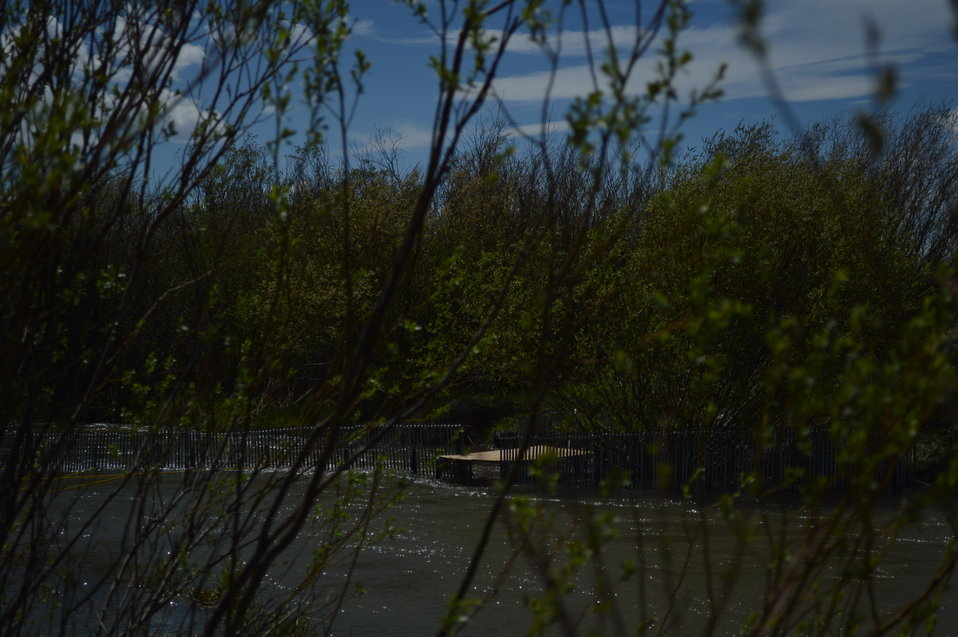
Regional Leadership Visit to Montana 2014